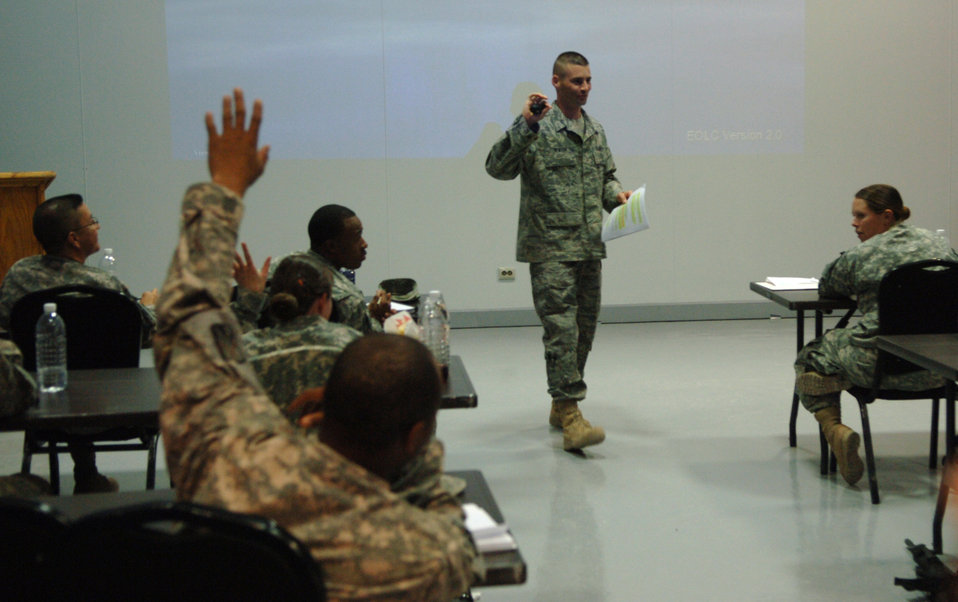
Equal opportunity crosses service lines

Master Sgt. Joe Newton teaches a portion of the Army's Equal Opportunity Leader's Course March 16 at Joint Base Balad, Iraq. He was the only Air Force instructor teaching during the Army course. Sergeant Newton is the 332nd Air Expeditionary Wing equal opportunity director deployed here from Wright-Patterson Air Force Base, Ohio.